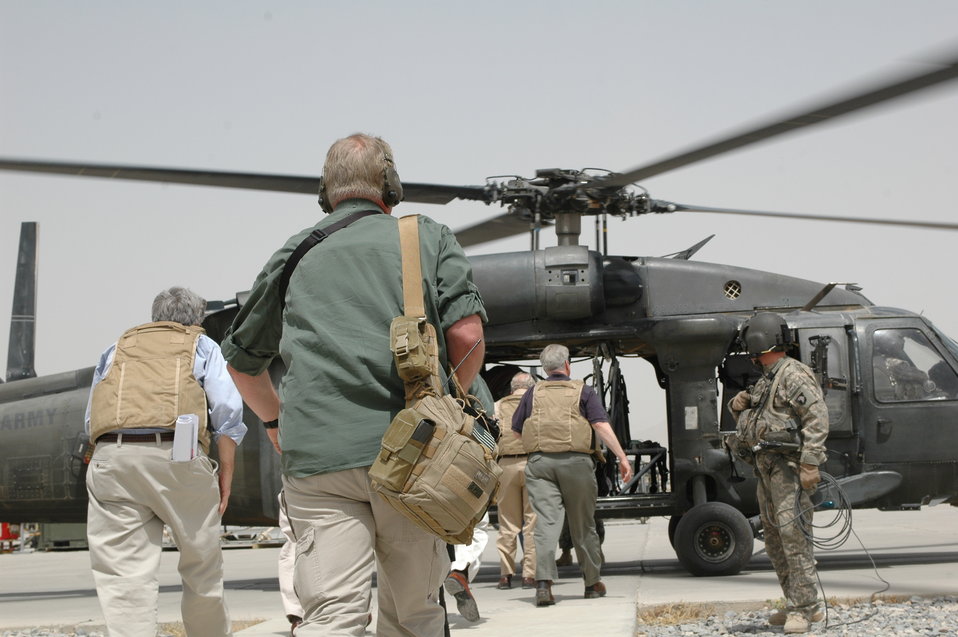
CODEL Berman